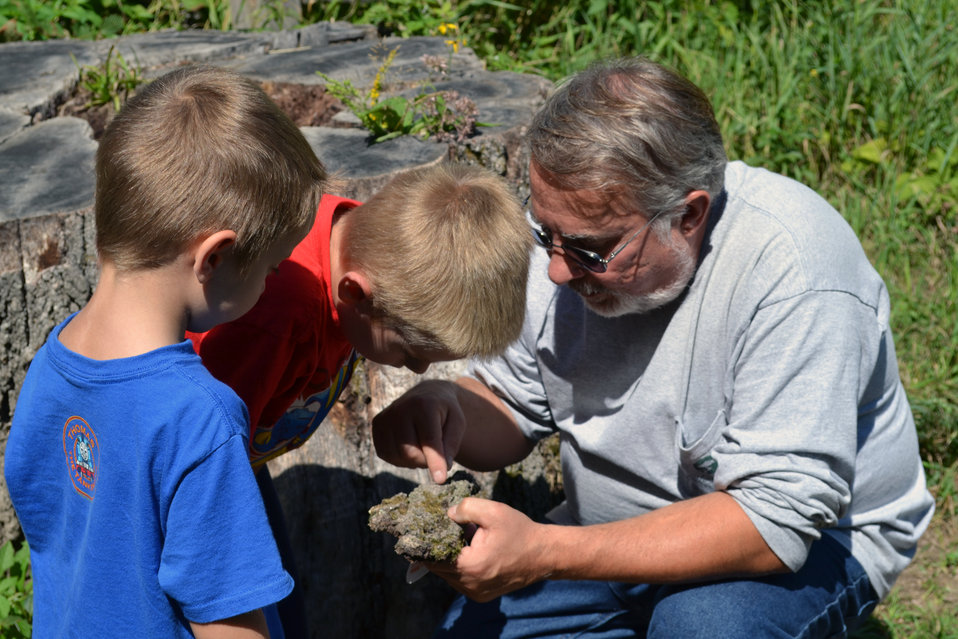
Exploring The Sentinel

McHenry County Conservation District Natural Resource Manager Ed Collins shares the story of The Sentinel, a black oak that lived for more than 300 years.